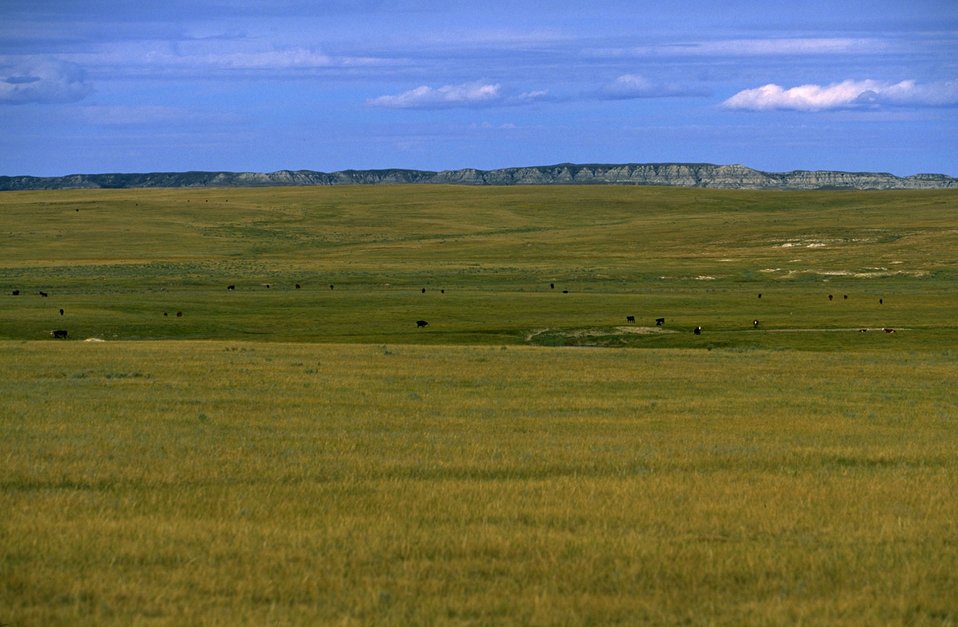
Cattle grazing on the eastern Montana prairie with badlands in the background